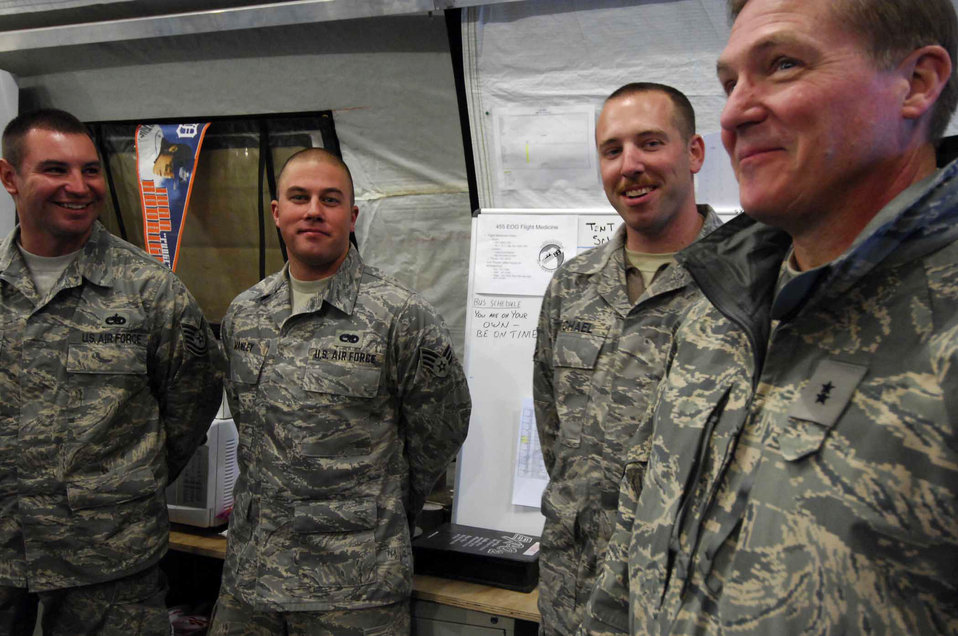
Bagram Airmen celebrate season

Maj. Gen. Maurice H.